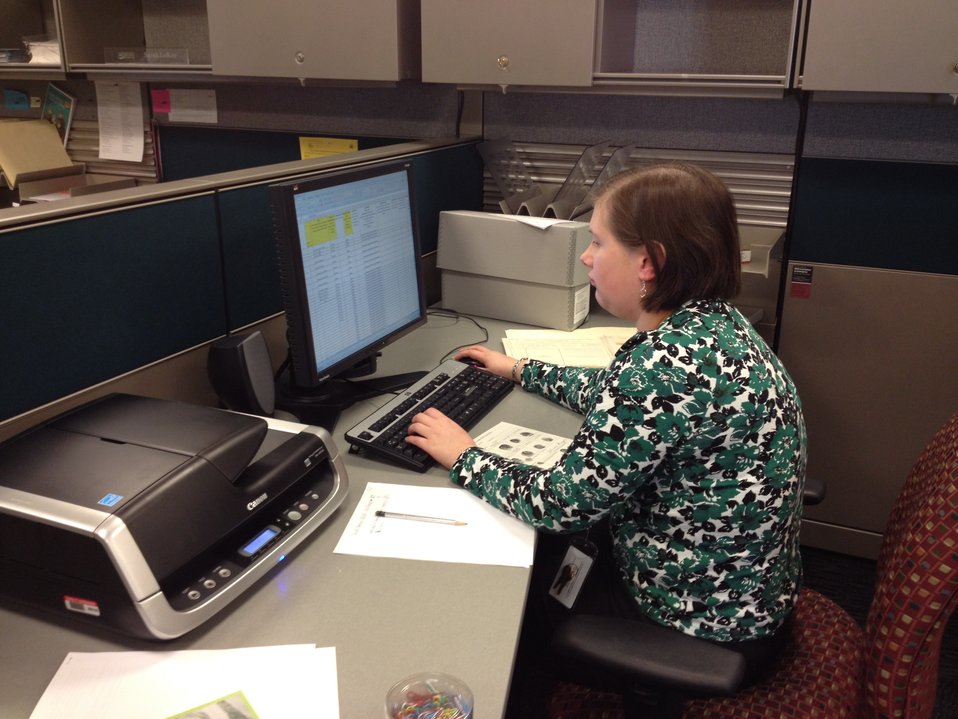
Laura Gentry (intern) in staff office space; Location: National Archives at Kansas City - RMKC Staff Office, Kansas City, MO